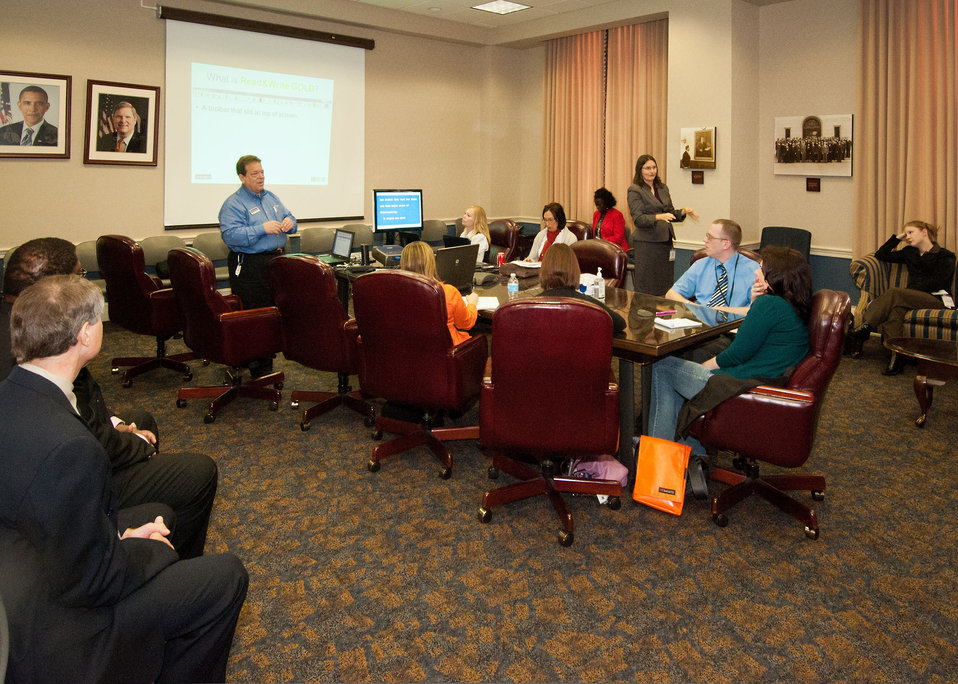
Government employees and visitors learn about assistive technology available to the workplace in breakout training sessions held at the U. S. Department of Agriculture (USDA) Departmental Management (DM) Target Center 20th Anniversary at USDA in Washington, D.C. on Thursday, Sept. 13, 2012. The USDA Target Center has provides Assistive Technology to employees with disabilities. The Center has assisted thousands of individuals with disabilities to further contribute to the mission of USDA.USDA photo by Bob Nichols.